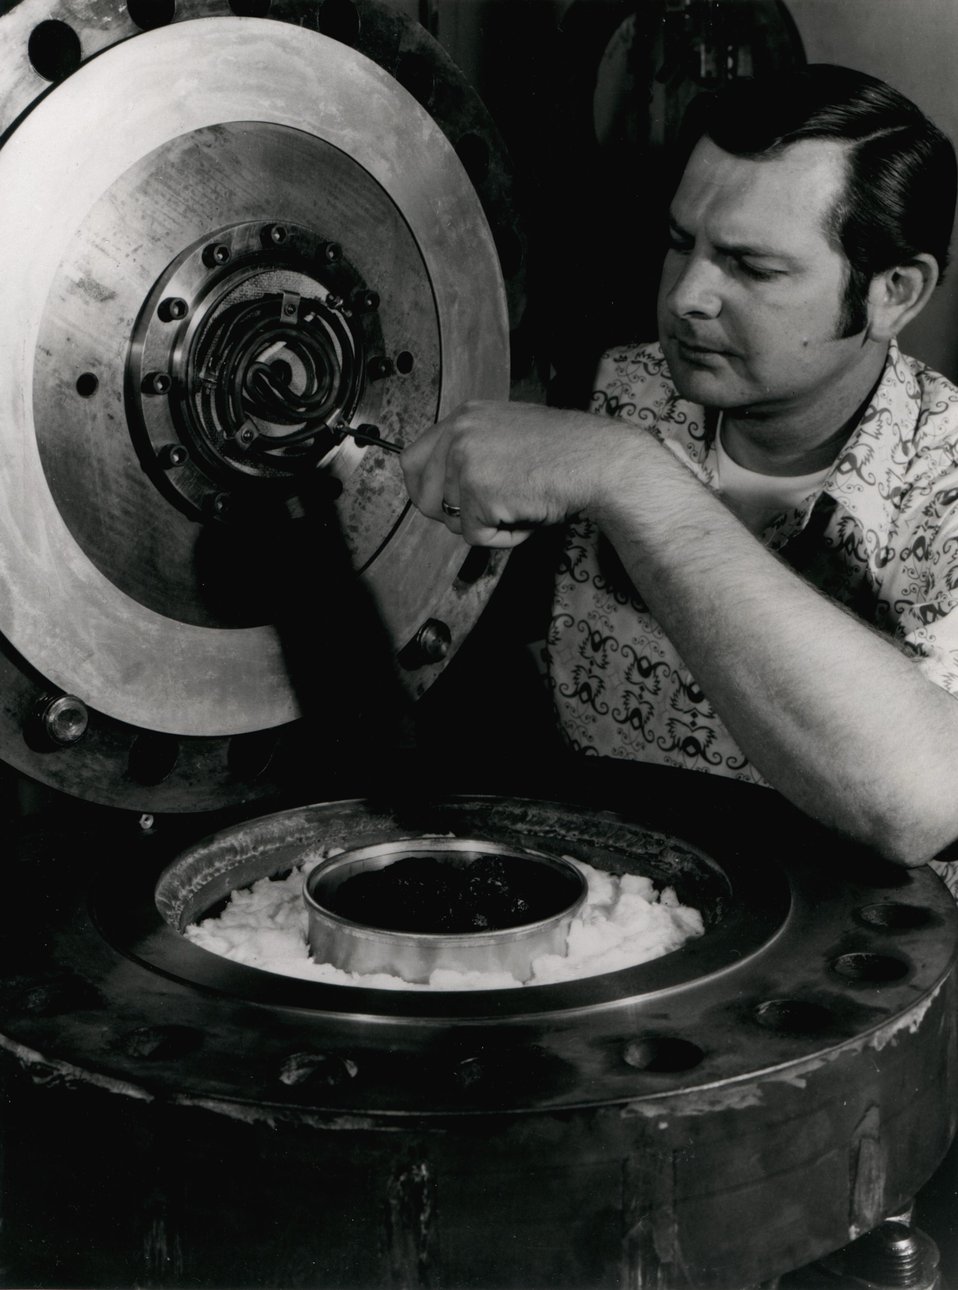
Scientists at the Energy Research and Development Administration's (ERDA) Lawrence Livermore Laboratory in California are using this pressure chamber in a laboratory study of the problems of developing a new technology to gasify coal deep underground without mining. The device in this photograph simulates this kind of underground retort. Circa 1975.